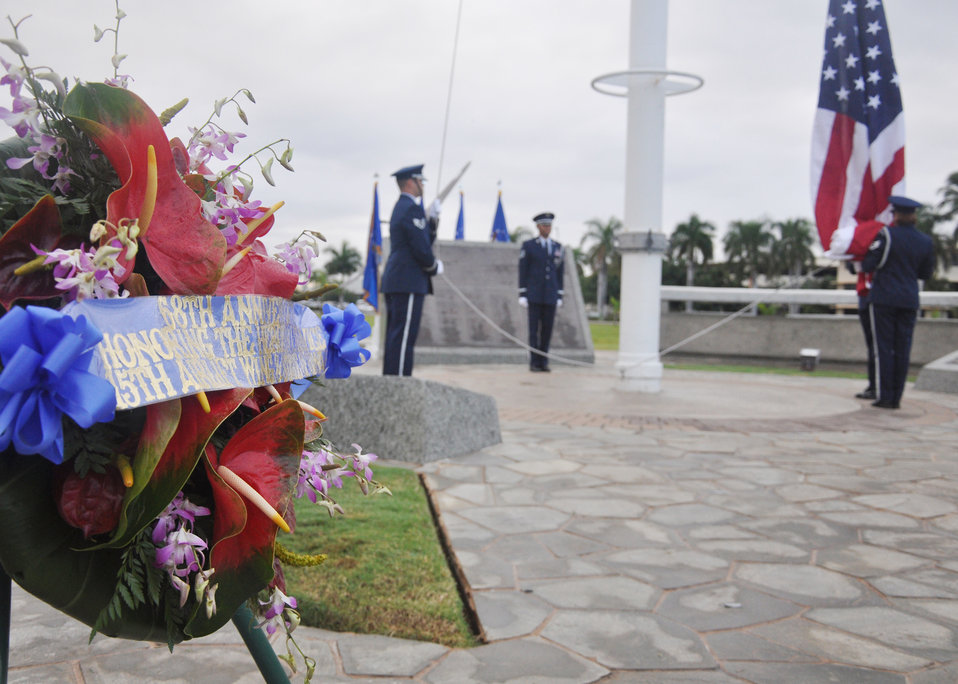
Hickam pays tribute to Airmen's storied legacy

The Hickam Air Force Base honor guard prepares to raise the U.S. flag at Hickam AFB during the ceremony Dec. 7, 2009, that marked the anniversary of the Dec. 7, 1941, attacks on Pearl Harbor Navy fleet and the Army Air Corps fields of Hickam, Wheeler and Bellows. Survivors and their families from the infamous day were on hand to pay tribute to their lost brothers and sisters in arms. Wreaths and tokens of honor were laid at the base of the memorial at Atterbury Circle.